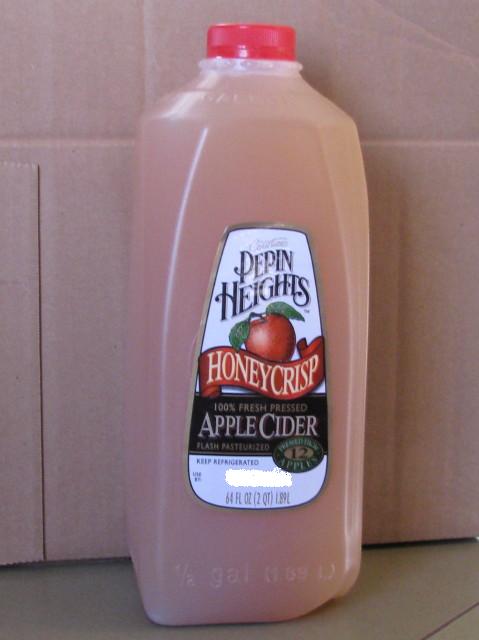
Recalled - Honeycrisp Apple Cider

January 10, 2012 – Product Recall – Pepin Heights Orchards Issues Cider Advisory.